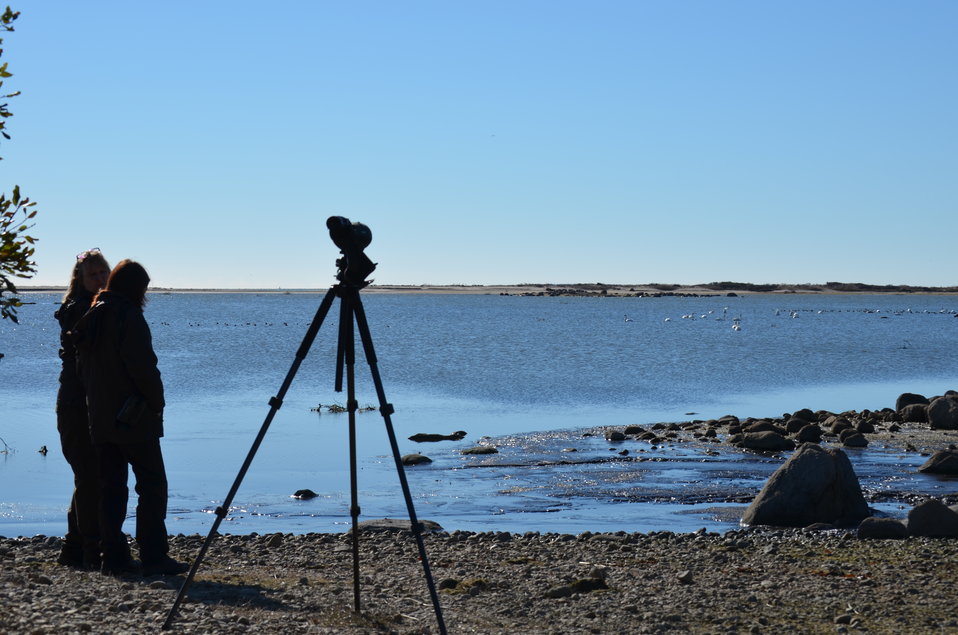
Documenting the transformation at Trustom Pond National Wildlife Refuge (RI)

Service staff take a moment to watch the vast expanse of saltwater infused into Trustom Pond following Hurricane Sandy.